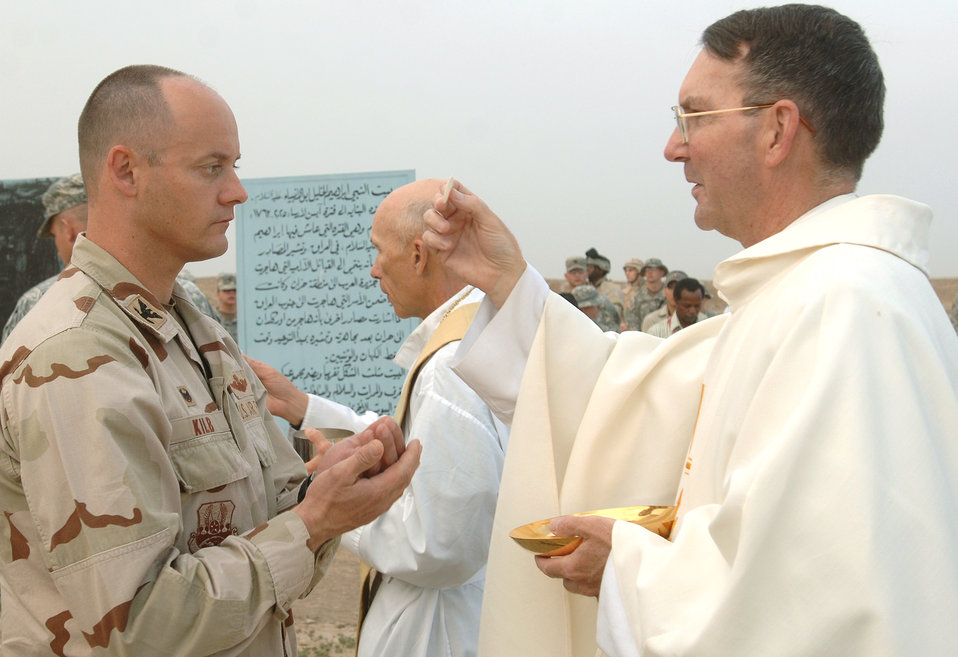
House of Abraham

Col. Kevin Kilb receives the Holy Eucharist, from Chaplain (Maj.) Larry Bailey on Sunday, April 16, 2006, in observance of Easter. Servicemembers from Ali Base, Iraq, attended Mass at the House of Abraham in Ur; Abraham is considered by religious scholars to be the father of three religions: Islam, Judaism and Christianity.